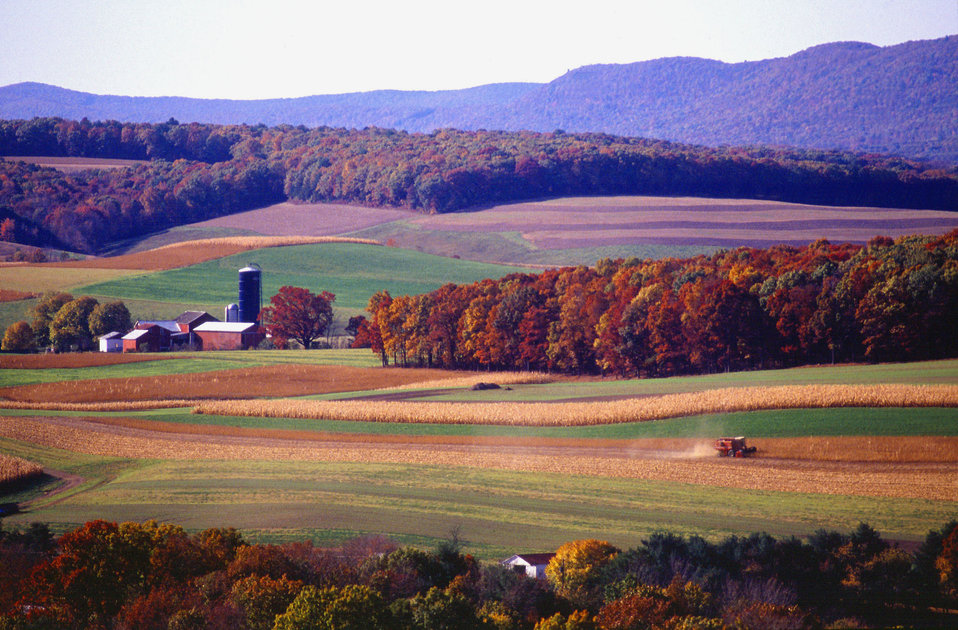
A tractor tills a field on a farm near Klingerstown, PA.